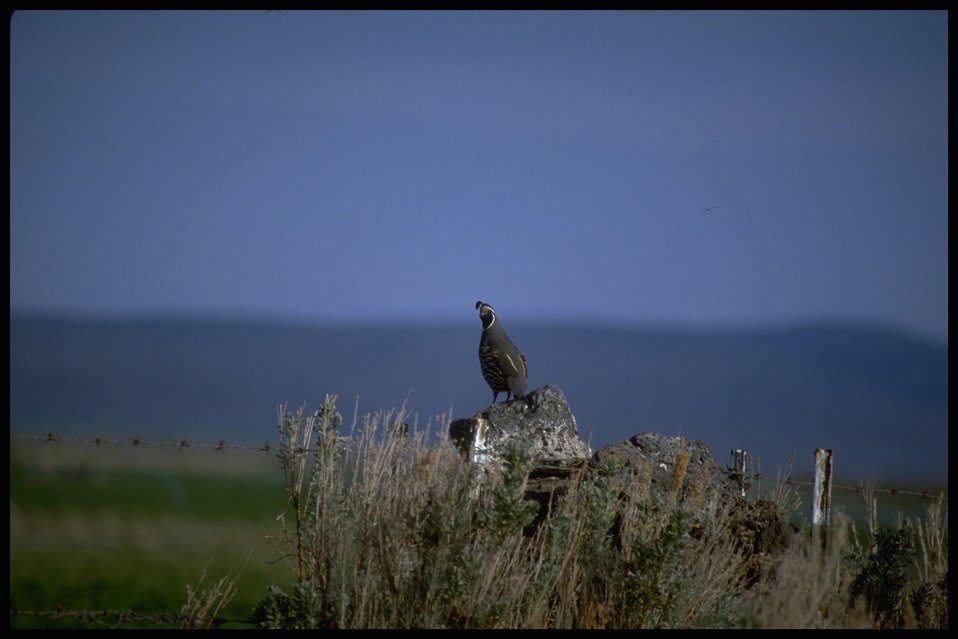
Quail. Lakeview District.